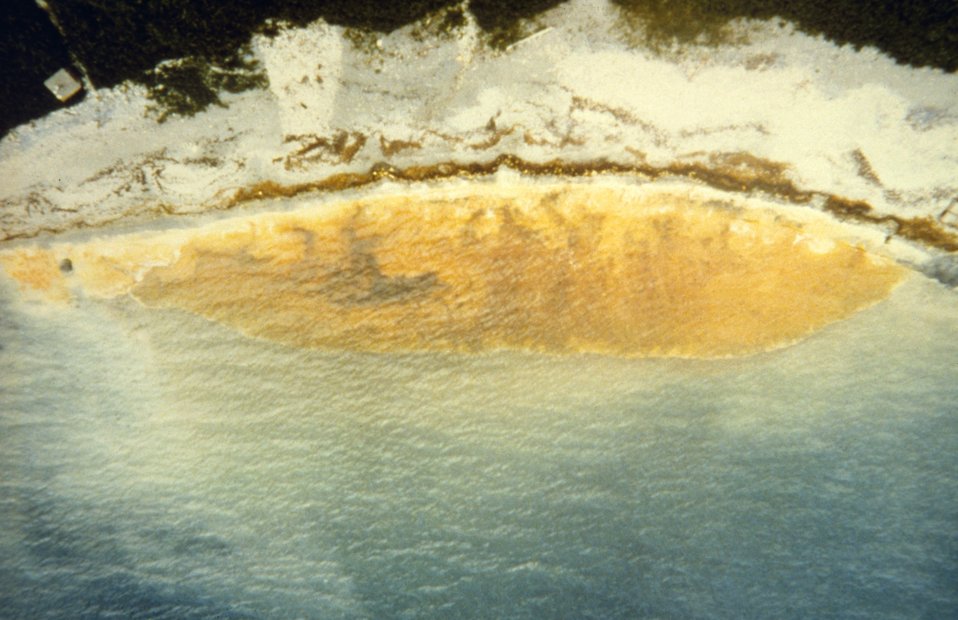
Hull Cove, Jamestown, RI